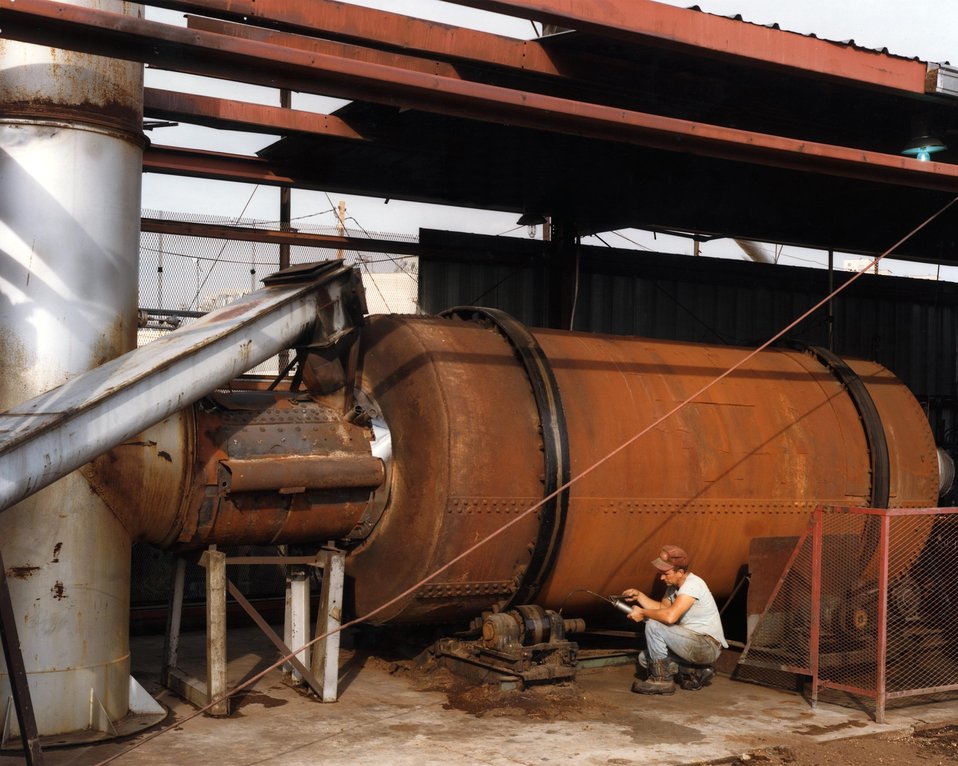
WORKER KNEELS BESIDE THE ROTARY KILN AT THE PALLET MFG. PLANT.

LOCALLY AVAILABLE BIOMASS, IN THIS CASE SAWDUST AND WOOD CHIPS FROM A PALLET MANUFACTURING PROCESS, IS PROCESSED TO PRODUCE MORE USABLE FORMS OF BIOMASS. THE PROCESS AT THIS PLANT PRODUCES CHARCOAL FOR MARKETING AND STEAM FOR A NEIGHBORING RICE PROCESSING PLANT.